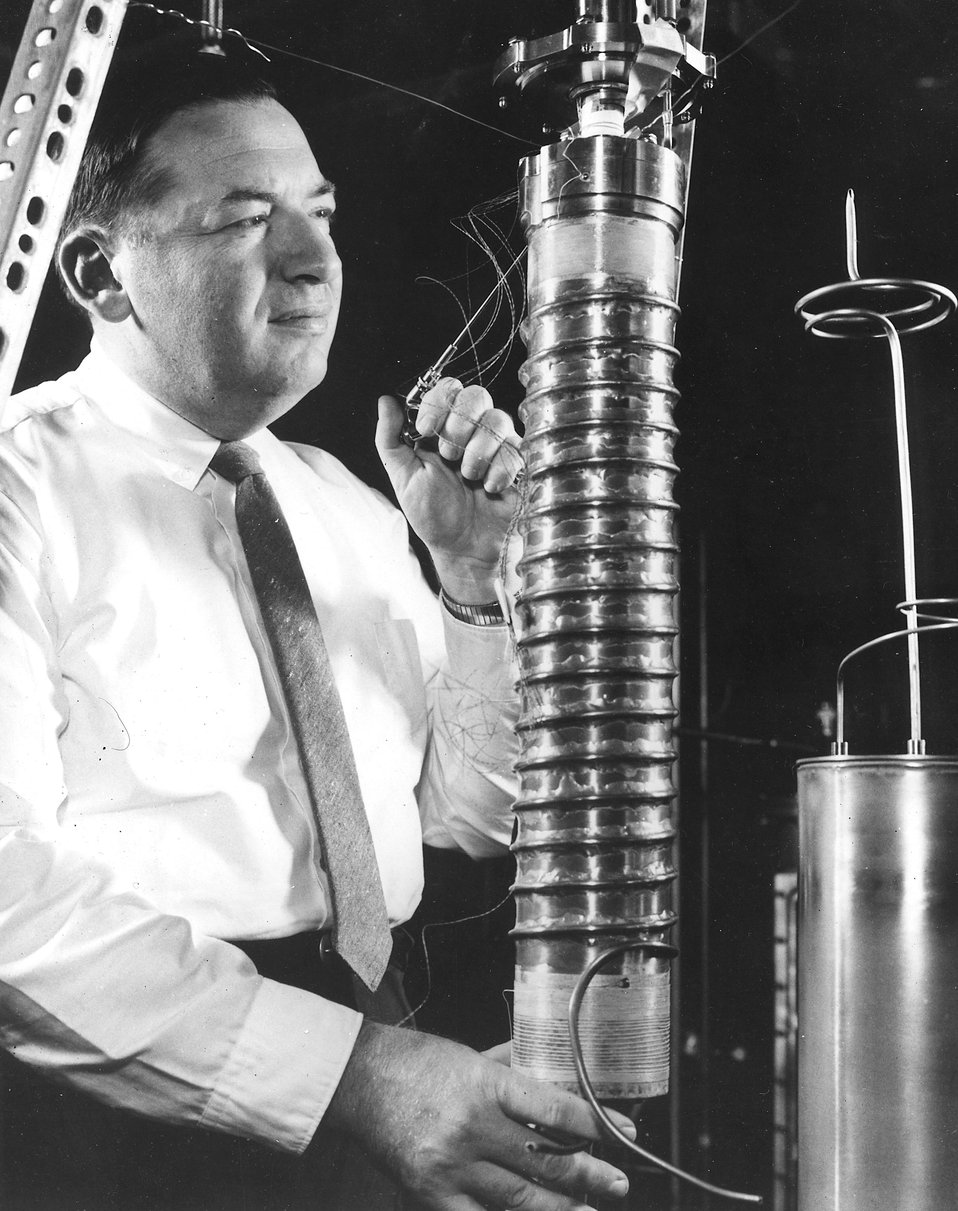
A chemist is using a crystal to measure the differences in vapor pressures between the isotopic varieties of a substance. c. 1967